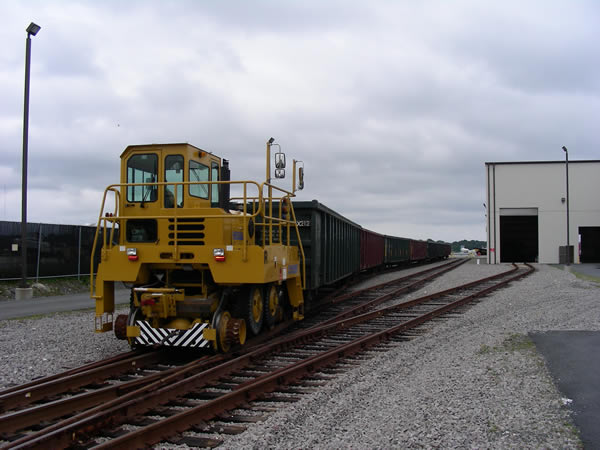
August 2009, Track-mobile moves rail cars in and out of the de-watering facility